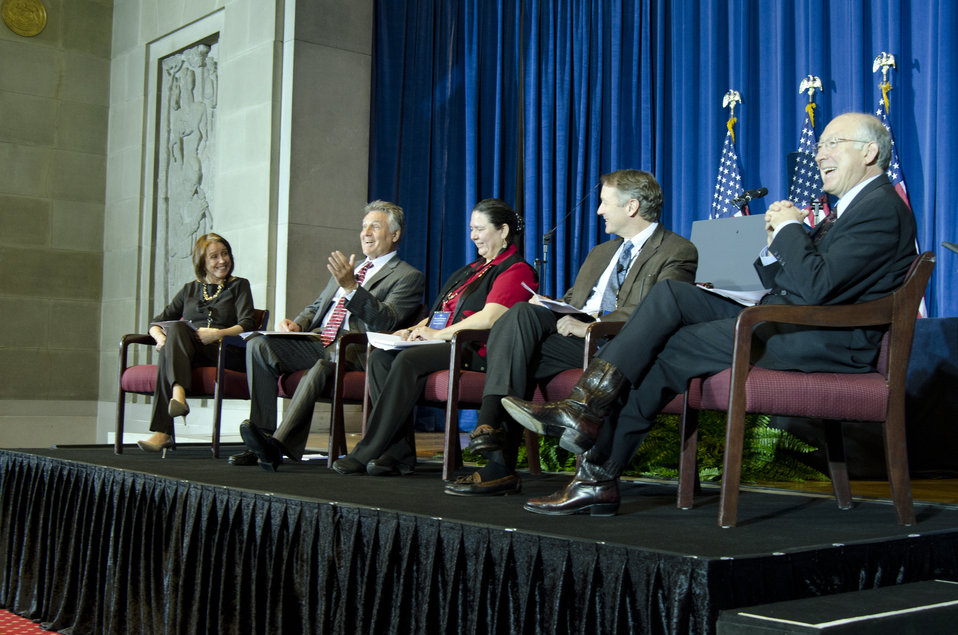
(L to R) U.S. Corps of Engineers Assistant Secretary for Civil Works Joan Darcy, Disabled Sports USA, Wounded Warrior Program representative Kirk Bauer, Tribal Chairwoman from the Lower Elwha Klallam Tribe in Washington State Frances Charles, The Orvis Company Vice Chairman of Retail and Sporting Traditions Dave Perkins, and Interior Secretary Ken Salazar participated in the, “Restoring Rivers: Building Resilience for People and Wildlife” panel during the White House Conservation conference, “Growing America’s Outdoor Heritage and Economy” at the Interior Department, Yates Auditorium in Washington, D.C., on Friday, March 2, 2012. The conference was part of President Barrack Obama’s, “America’s Great Outdoors Initiative” to spotlight community-driven conservation efforts and discussed how to build their success.